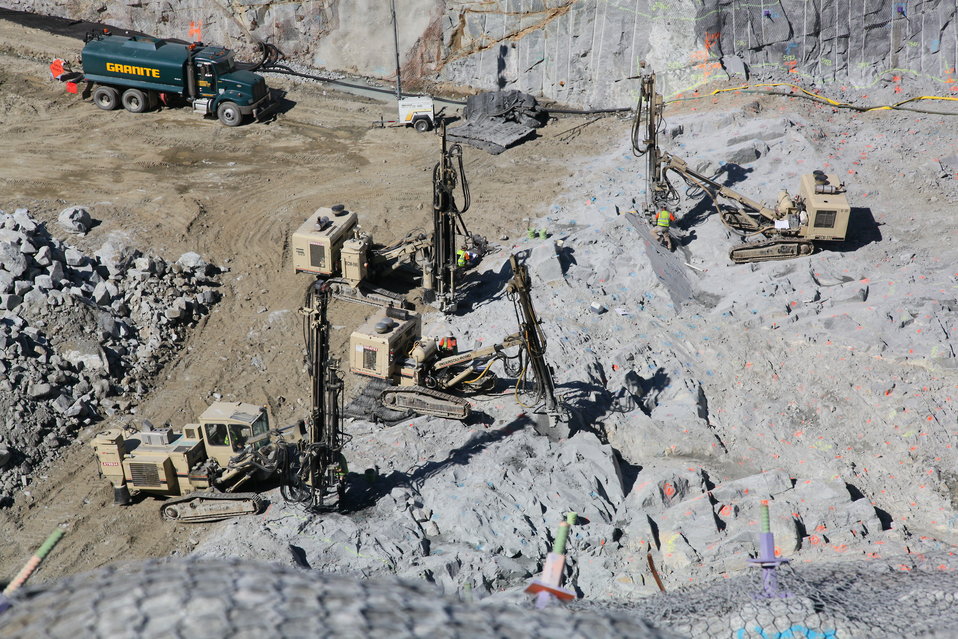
Drilling for final blasting at spillway

Contractors for the U.S. Army Corps of Engineers Sacramento District drill holes for the final blasting of the shear zone at the excavation site for the Folsom Dam auxiliary spillway in Folsom, Calif., March 8, 2012. The spillway, scheduled to be ready for use in 2017, will allow Folsom Dam to release water sooner and more safely. The project is part of the Folsom Dam Joint Federal Project, a joint effort of the Sacramento District, the U.S. Bureau of Reclamation, the Central Valley Flood Protection Board and the Sacramento Area Flood Control Agency to improve the safety of the dam and reduce flood risk for the greater Sacramento area.